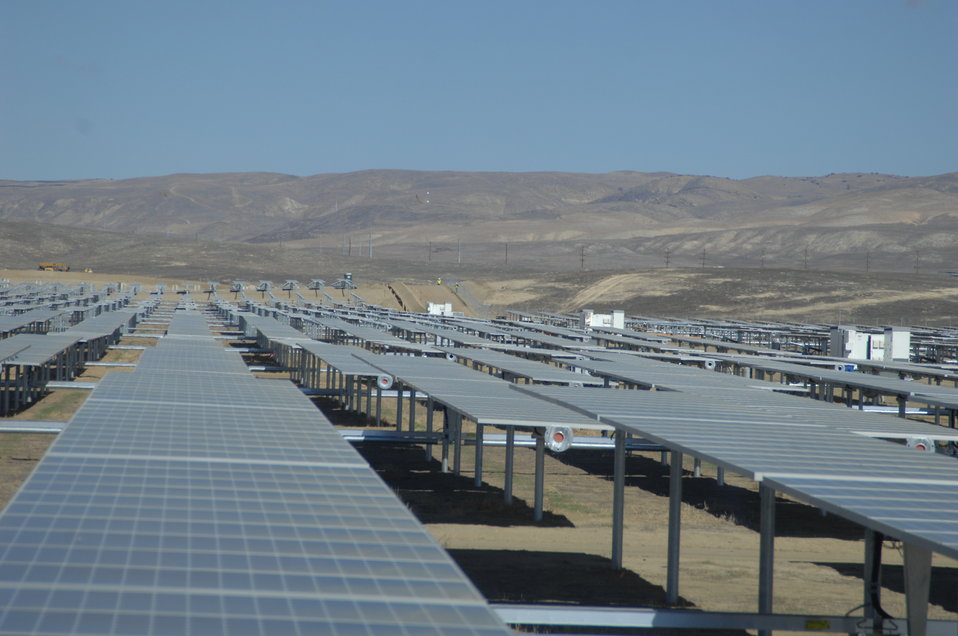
Solar Panels at California Valley Solar Ranch 3